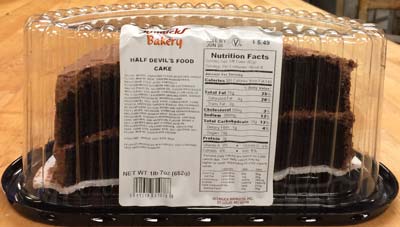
RECALLED – Cake

June 13, 2014 – Schnucks Bakery Recalls Devil’s Food Cakes Topped With Undeclared Pecans.